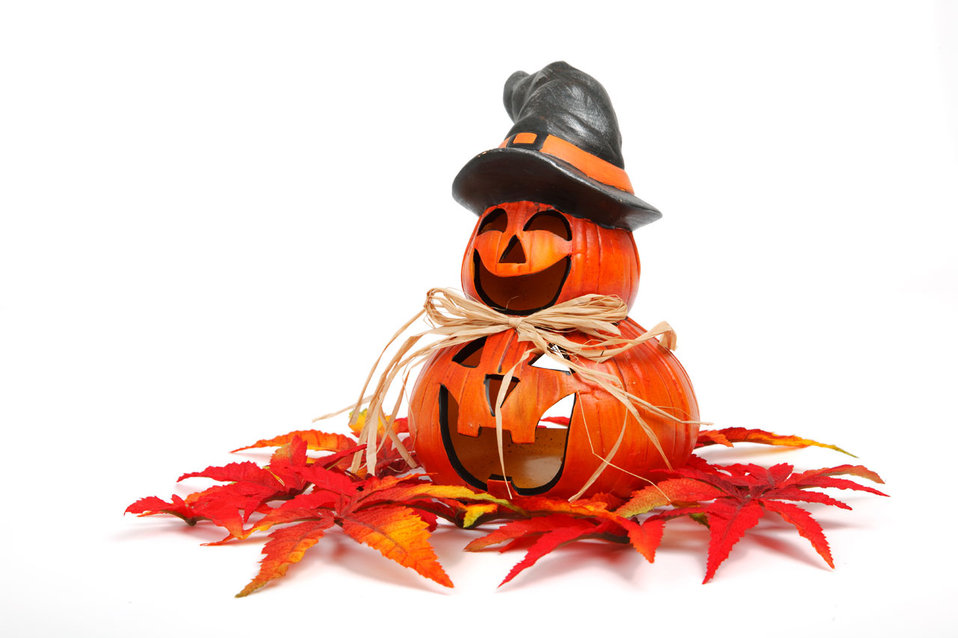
Cute halloween decoration

Jack-o-lantern halloween decoration with leaves isolated on white background.